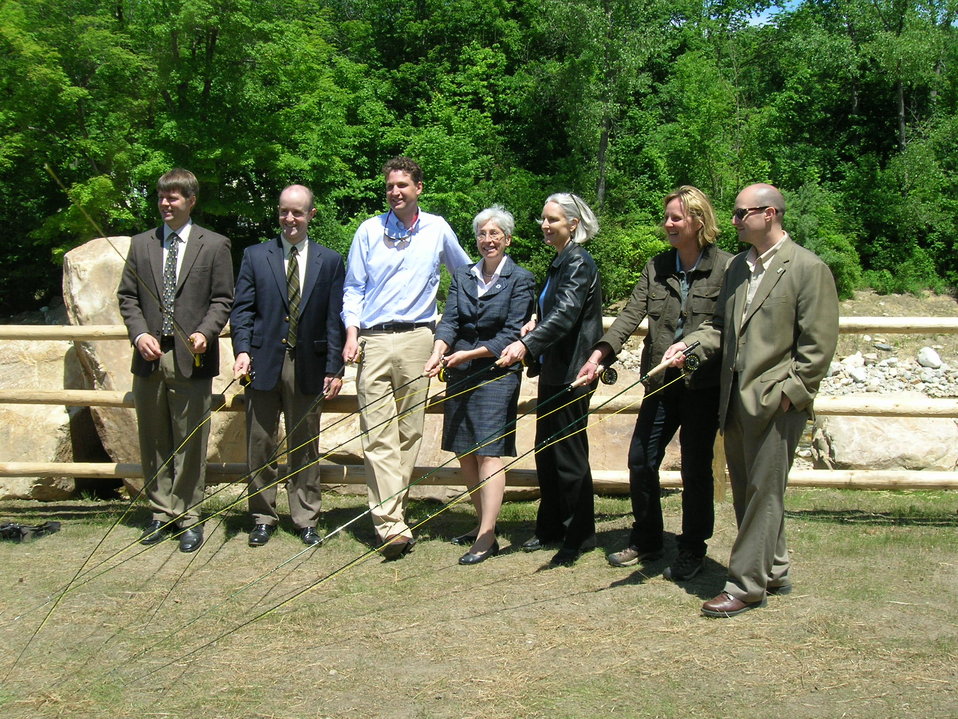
Briggsville Dam Removal Celebration